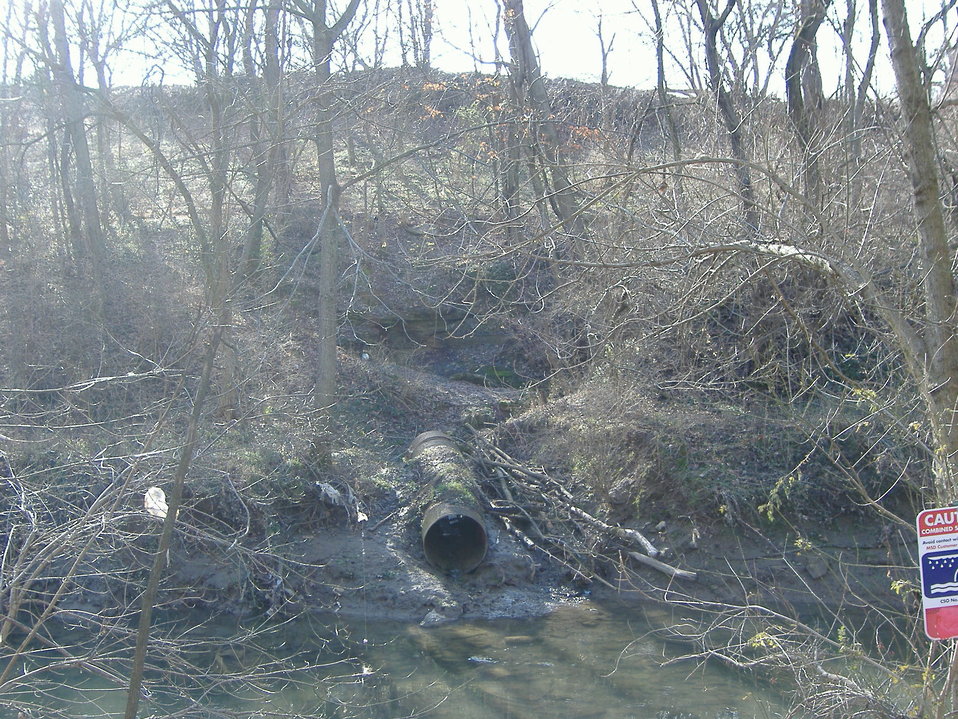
Eleven Jones Cave in Louisville, Kentucky